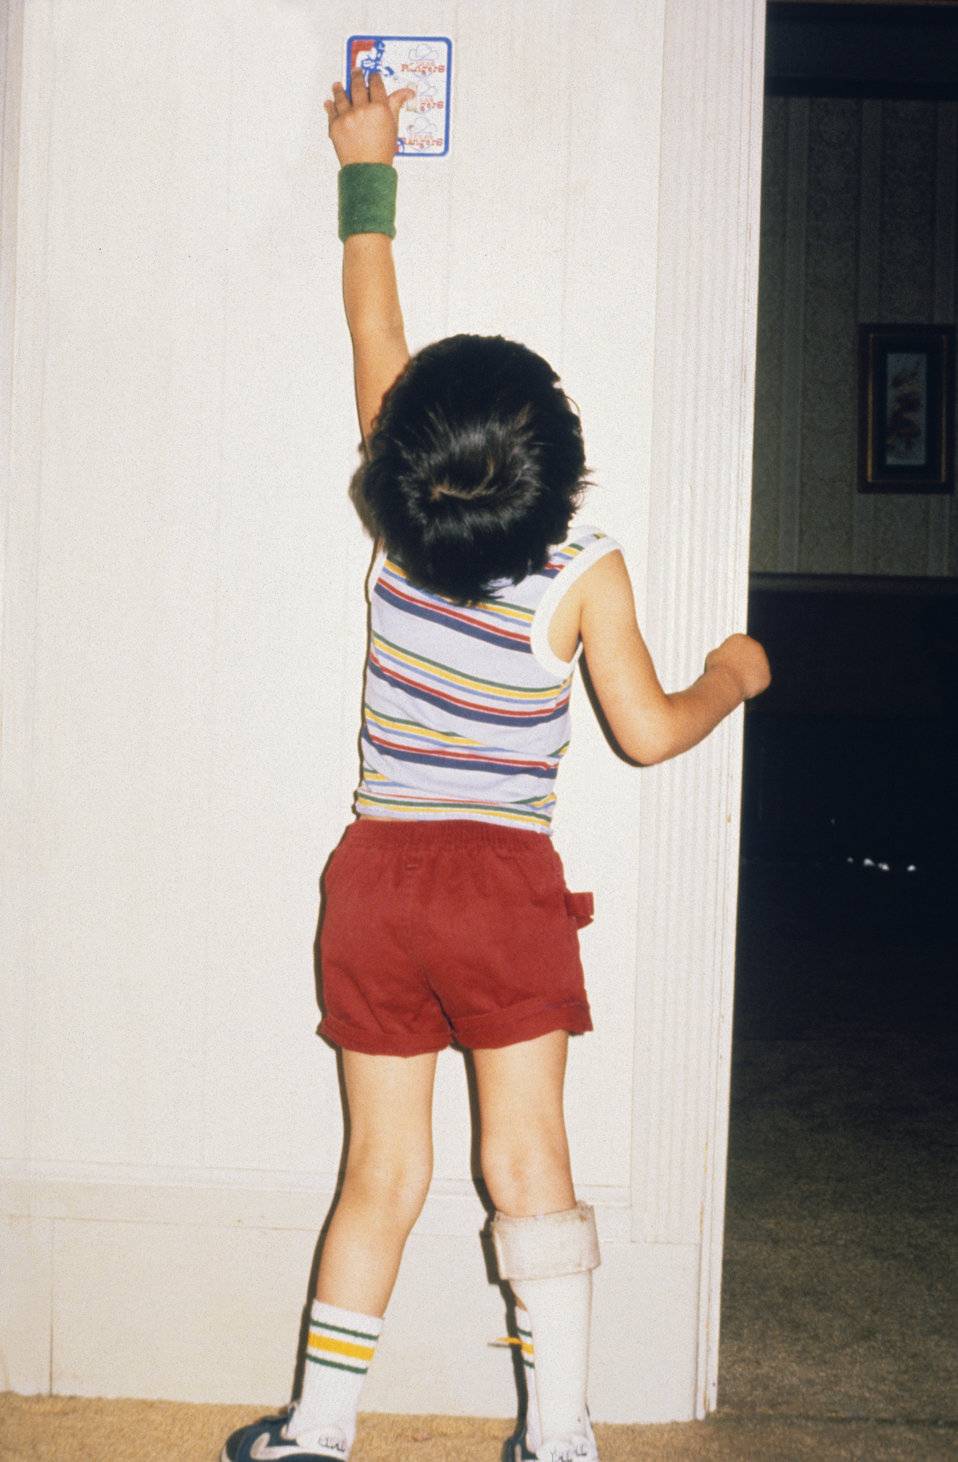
This 2000 image revealed that light switches that were lowered so that they were more reachable, might also be within reach of younger children. This particular image showed a child who while wearing a leg brace, was struggling to reach a standard light switch. This was also a reminder that care should be taken when considering control height and location with respect to children's access, and particularly with respect to HVAC controls, security systems, stoves and electrical panels.